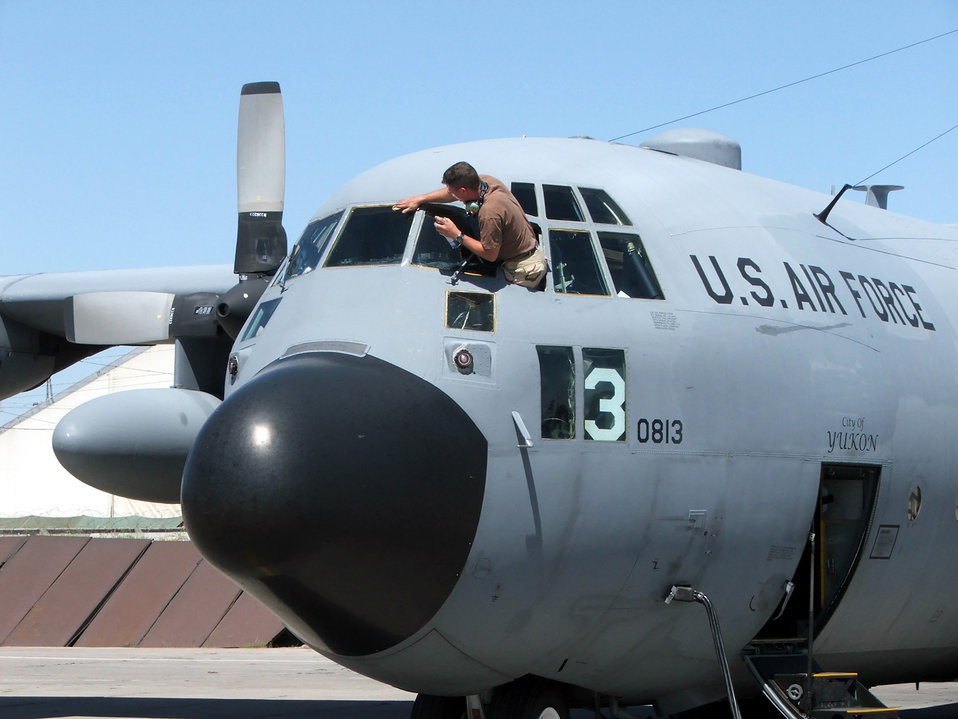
Squeaky clean

KARSHI-KHANABAD AIR BASE, Uzbekistan -- A crew chief cleans a C-130 Hercules windshield during maintenance here April 16. He is assigned to the 774th Expeditionary Airlift Squadron.